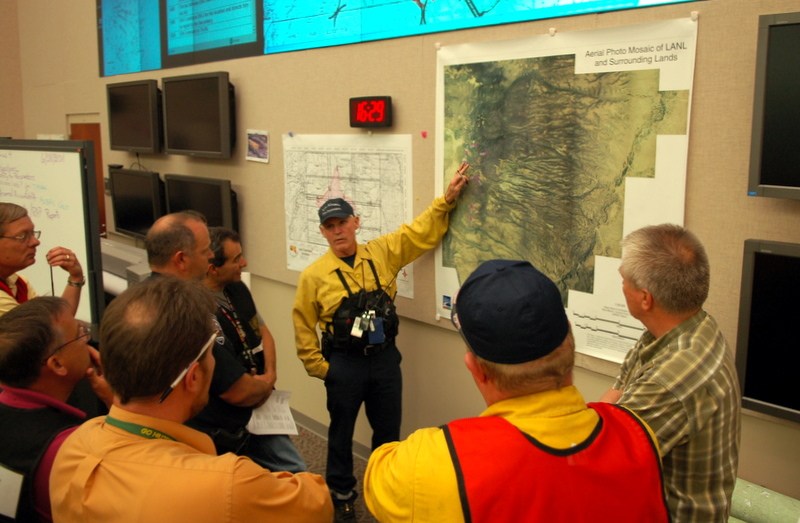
Los Alamos Fire Department Chief Doug Tucker updates status of Las Conchas on a map in the Emergency Operations Center at Los Alamos National Laboratory.
The Las Conchas Fire started on June 26, 2011, it was caused by a fallen tree that caught fire after it came in contact with power lines nearby. The fire had burned over 121,000 acres, including 63 residences. At no time were hazardous materials in danger at Los Alamos National Laboratory. The lab was closed for a week and reopened on July 6th.